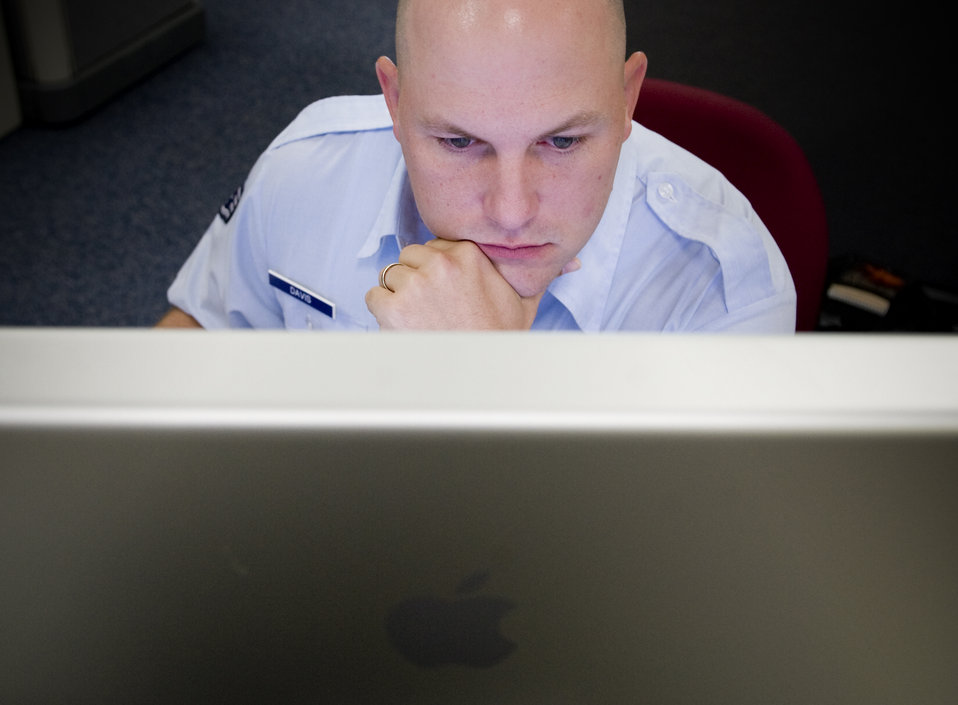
Internet Research

Staff Sgt. Bennie Davis III researches information on the Air Force Knowledge Now Web site.